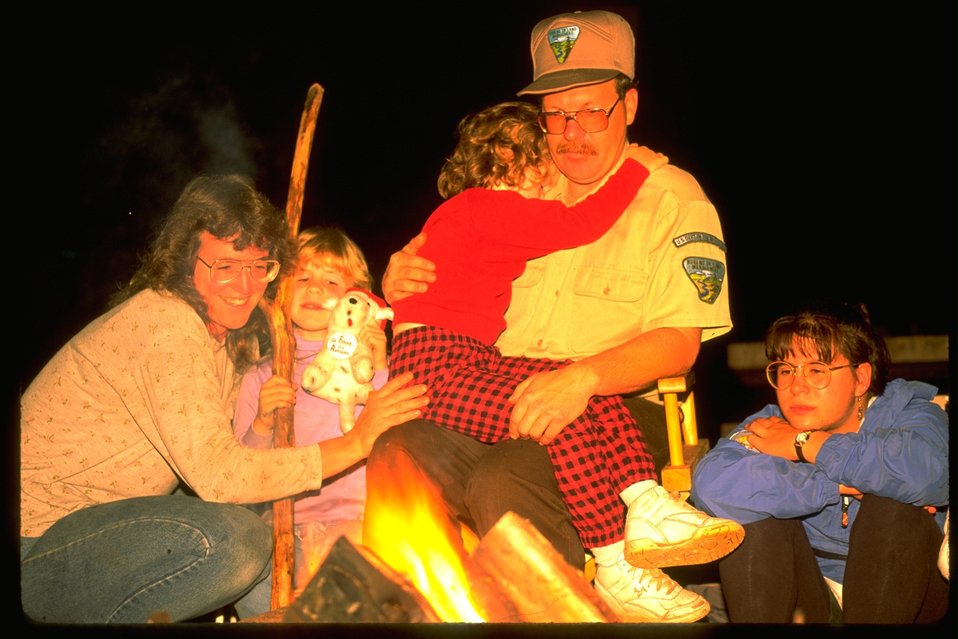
Loon Lake evening program.